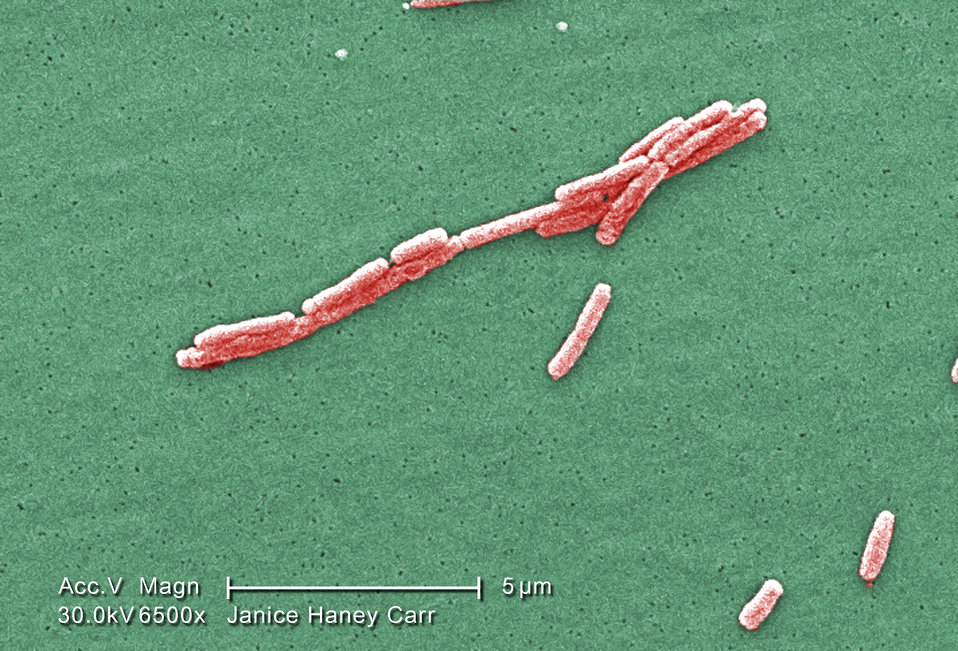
Under a moderately-high magnification of 6500X, this colorized scanning electron micrograph (SEM) depicted a number of Gram-negative Legionella pneumophila bacteria. Please see PHIL 11092 through 11152 for additional SEMs of these organisms, specifically PHIL 11115 for a black and white version of this image. Some views in this series reveals the presence of flagellar appendages.